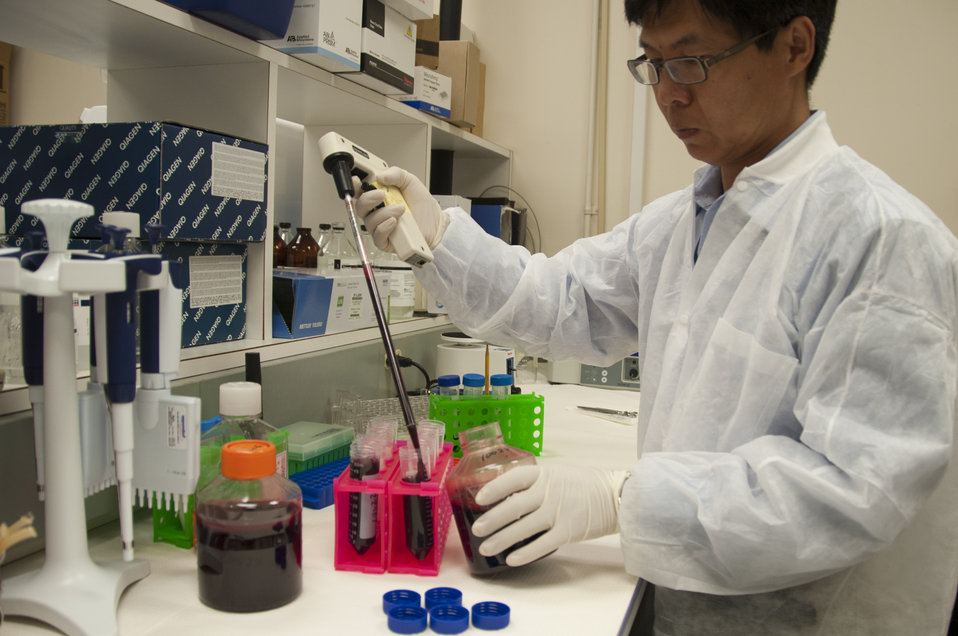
Blood Research: Saving Lives (8319)

Jason Liu, Ph.D., laboratory chief at FDA’s Office of Blood Research and Review, transferring blood to 50 ml tubes as he prepared to isolate blood components. A unit of whole blood can be separated, for example, into platelets and red blood cells. The separated components can be studied separately and can be used for different patients with different needs. FDA is responsible for the safety of our nation’s blood supply and is at the forefront of evaluating and encouraging innovative technologies for protecting it.

Read this Consumer Update to learn more: Advances in Saving Lives with Blood